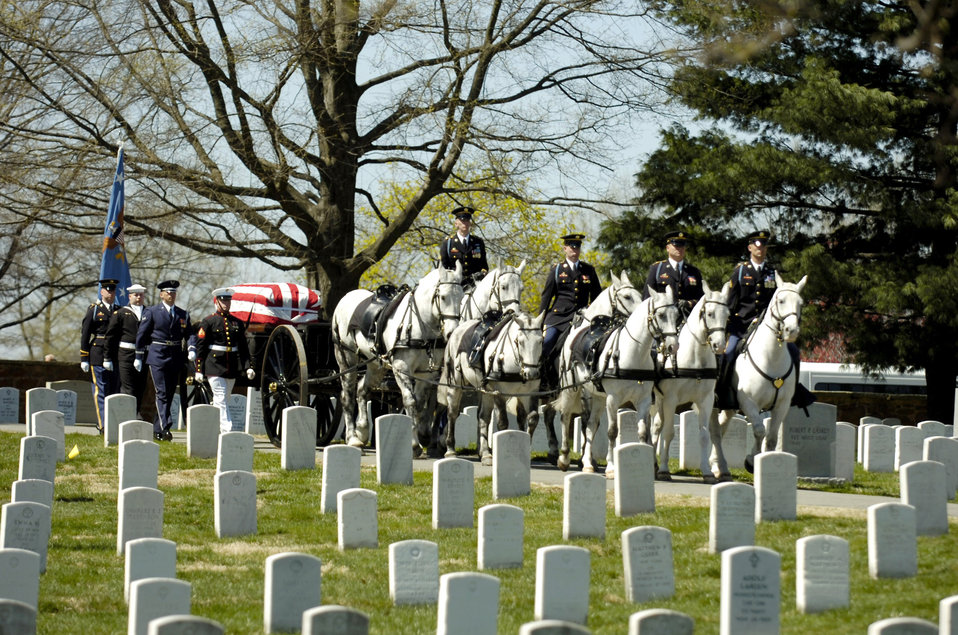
Final resting place

The casket of Caspar W. Weinberger, 15th Secretary of Defense, proceeds to its final resting place in Arlington National Cemetery in Arlington, Va., on April 4, 2006. He died Tuesday, March 28, 2006, and was 88 years old.